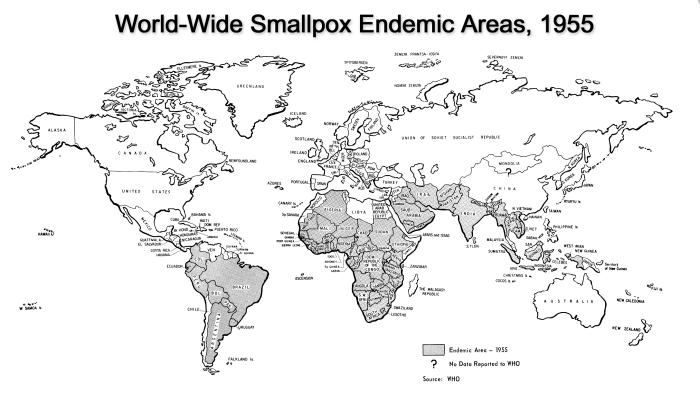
At the time, this 1955 map revealed the distribution of the smallpox virus, and the countries in which it was still endemic.